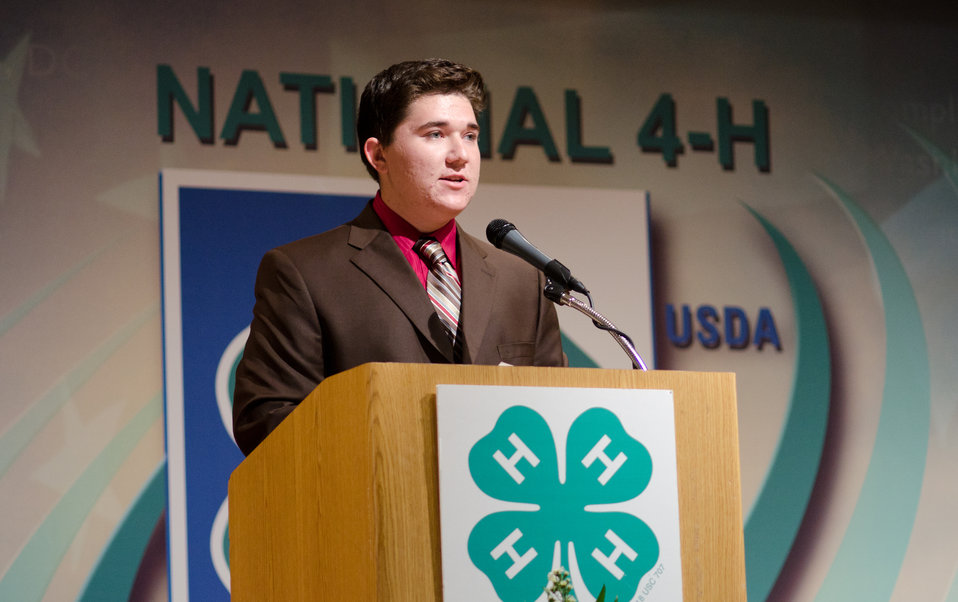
4-H Youth Development Program President Jared Padgett introduced U.S. Department of Agriculture (USDA) Secretary Tom Vilsack to approximately 300 youth from 47 states or territories and Canada at the National 4-H Conference on Tuesday, April 5, 2011, in Washington, DC. The conference is the premier youth development opportunity of the USDA. Aged between 15-19 years old the attendees were selected by various means by their states to represent them at the conference.